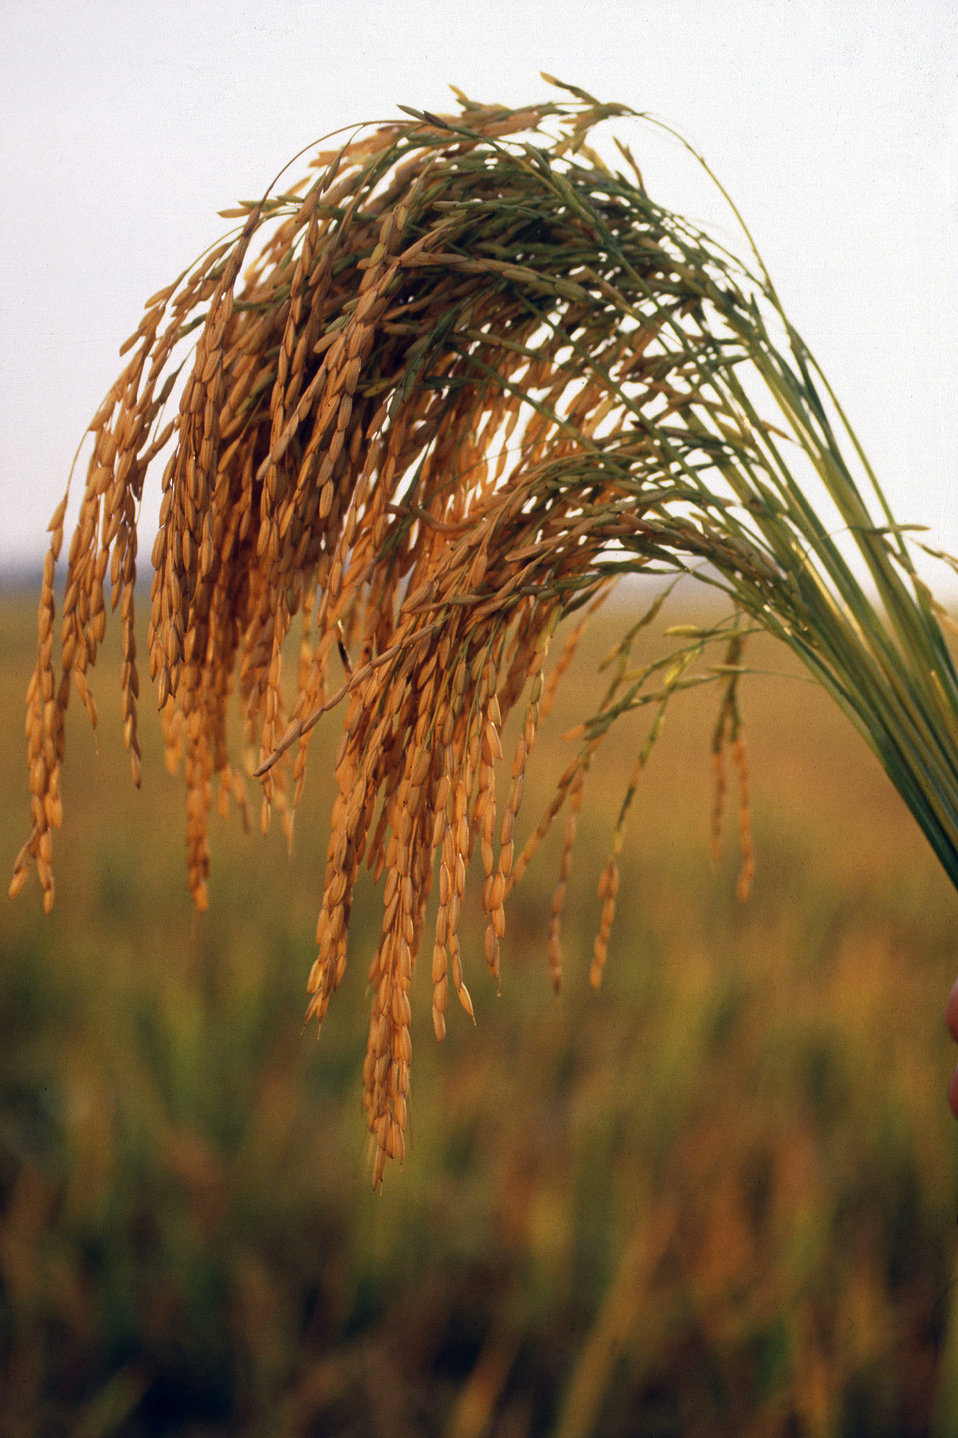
U.S. long grain rice is about four or five times as long as it is wide and is less glutinous than shorter grain rice. More than 100 varieties of rice are commercially produced primarily in six states Arkansas, Texas, Louisiana, Mississippi, Missouri, and California.